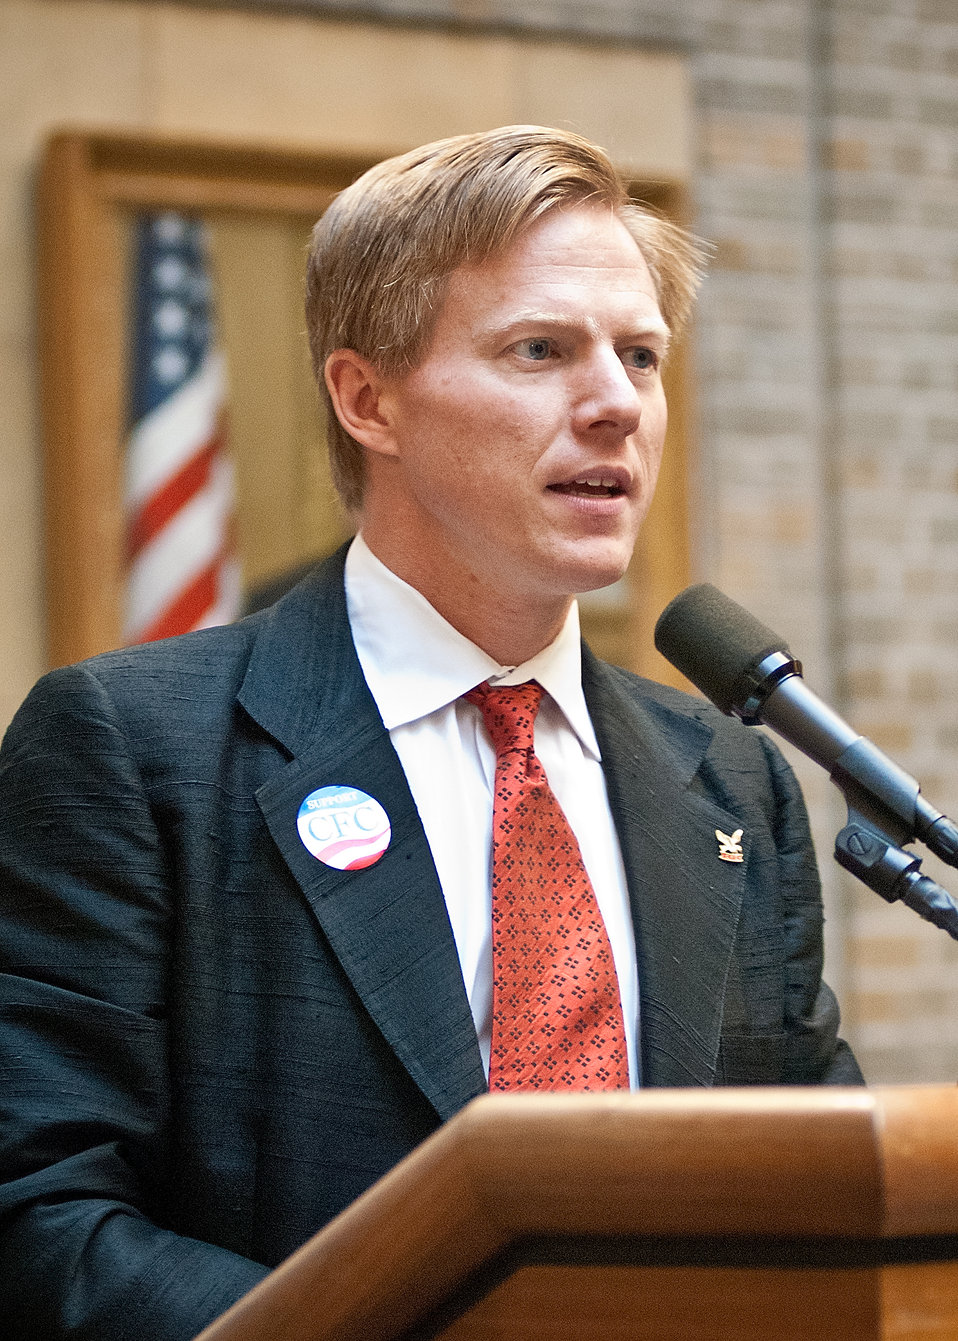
Max Finberg, Director, Center for Faith Based and Neighborhood Partnerships welcomes U. S. Department of Agriculture employees to the Second Annual Chili Challenge Contest to celebrate Hispanic Heritage Month at USDA in Washington, DC, on Thursday, October 6, 2011. Celebrity chefs and USDA employee chef volunteers used chili’s in delicious recipes to celebrate Hispanic cuisine. USDA’s traditional Chili Challenge trophy will be awarded to this year’s best-tasting chili. The judges for the challenge will be Chefs Toni Tipton-Martin, Chef Pedro Matamoros from 8407 Kitchen Bar, Corporate Executive Chef Lance Lemin, Ed Avalos, Undersecretary, Marketing and Regulatory Programs and Krista Hardin, Chief of Staff.